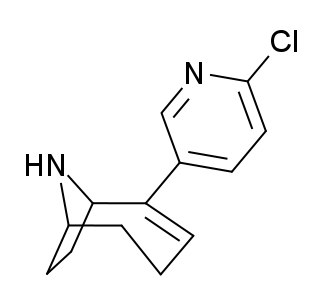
i drew this anyone can use it